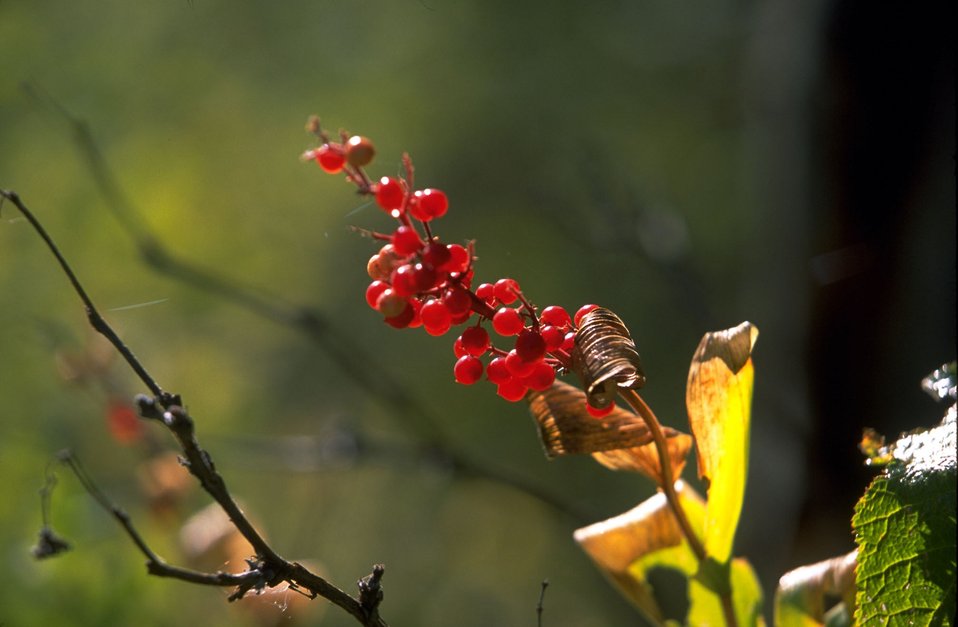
Closeup of Solomon seal berries